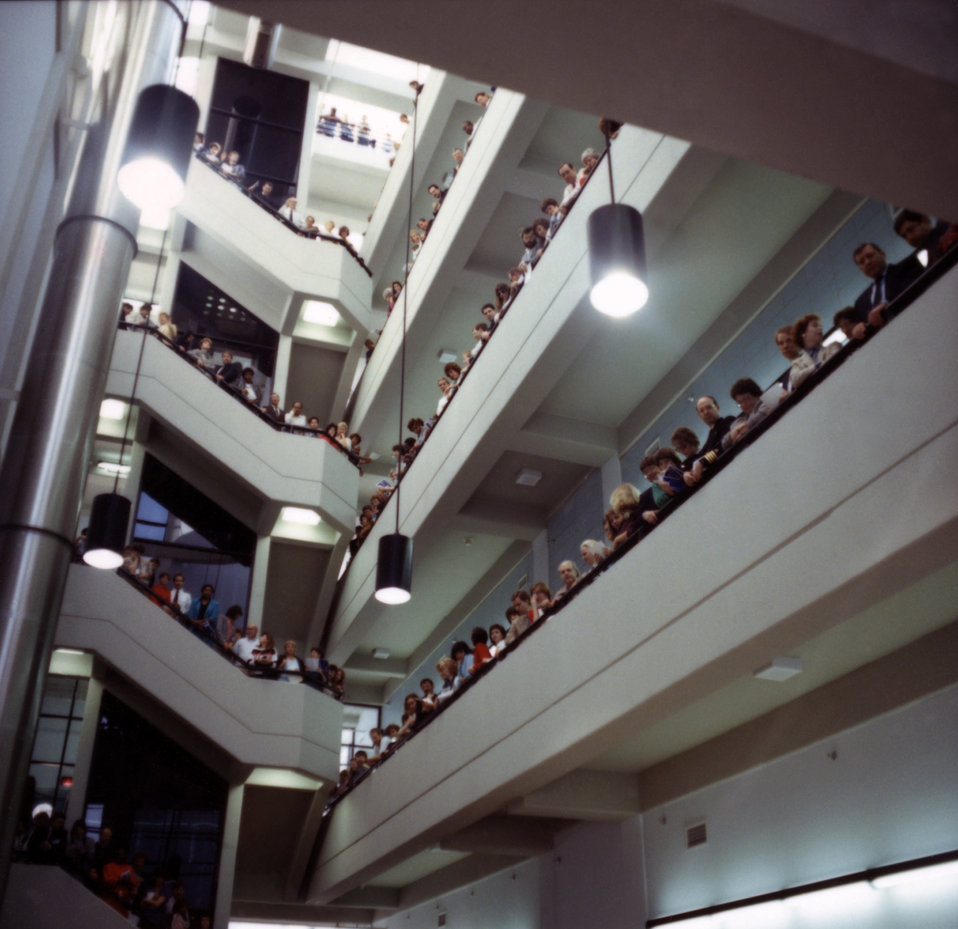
This photograph depicted Centers for Disease Control employees as they were viewing the Building 15 ribbon cutting ceremony located on the organization's Roybal Campus in Atlanta, Georgia.